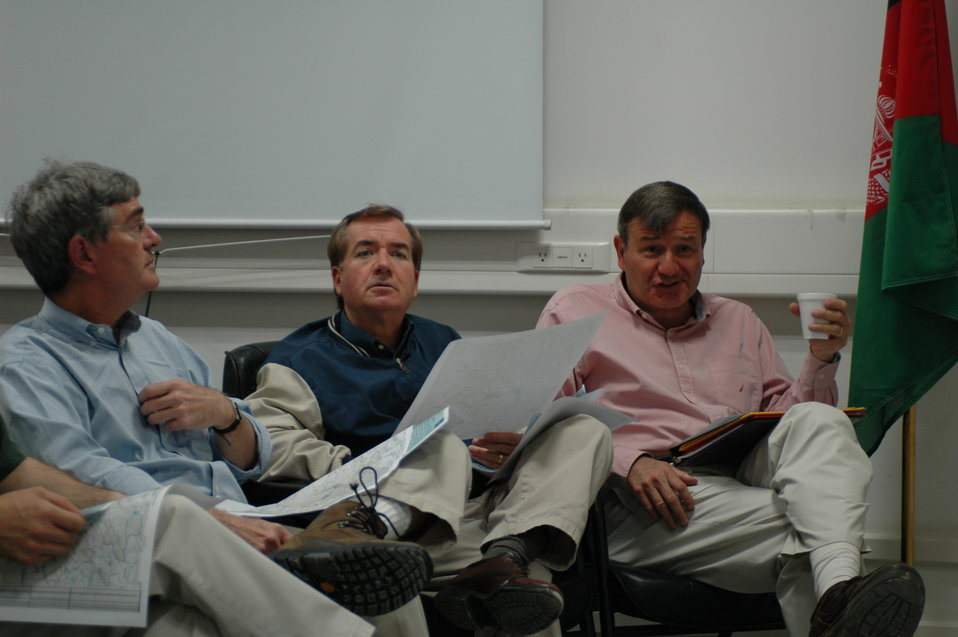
CODEL Berman